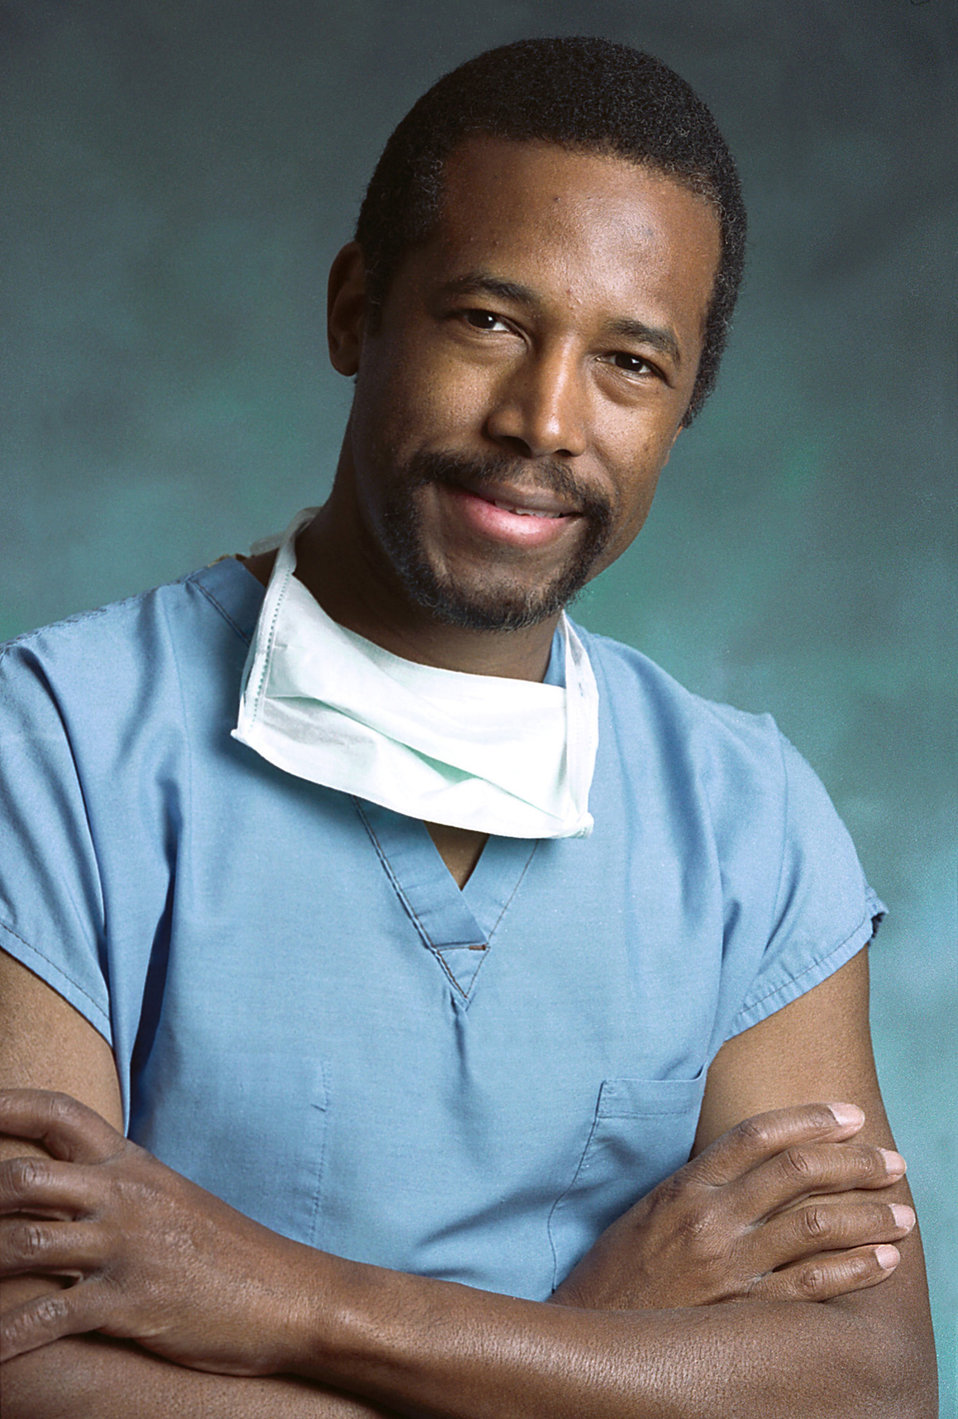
Ben Carson, M.D.

Famed pediatric neurosurgeon, bestselling author and Presidential Medal of Freedom recipient Ben Carson, M.D., will be a featured speaker at the 25th annual Quest for Excellence conference in April. The conference, celebrating a quarter century of service and achievement for the Malcolm Baldrige National Quality Award and the Baldrige Program, will be held for the first time in Baltimore, Md.